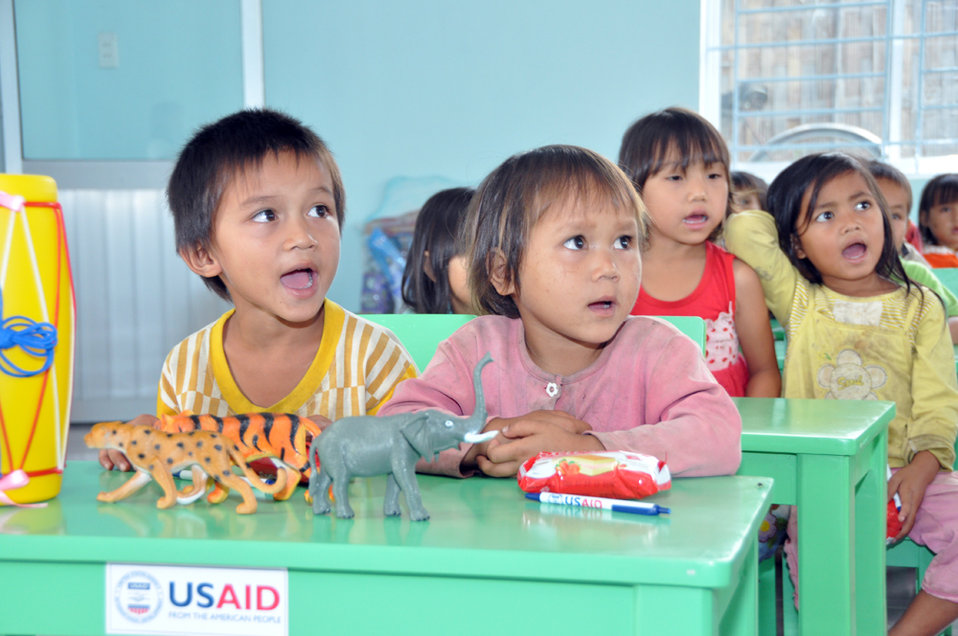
USAID contributes to refurbished pre-schools and teacher training in Vietnam